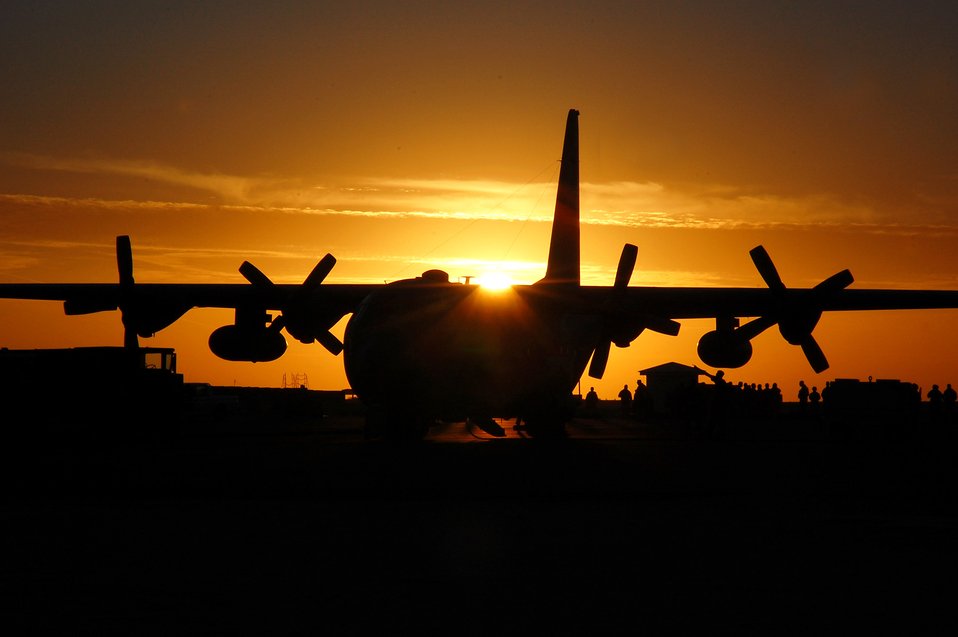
Getting ready to go

Servicemembers en route to Iraq prepare to board a C-130 Hercules Nov. 30 at an air base in Southwest Asia. The C-130 is capable of operating from rough, dirt strips and is the prime transport for air dropping troops and equipment into hostile areas.